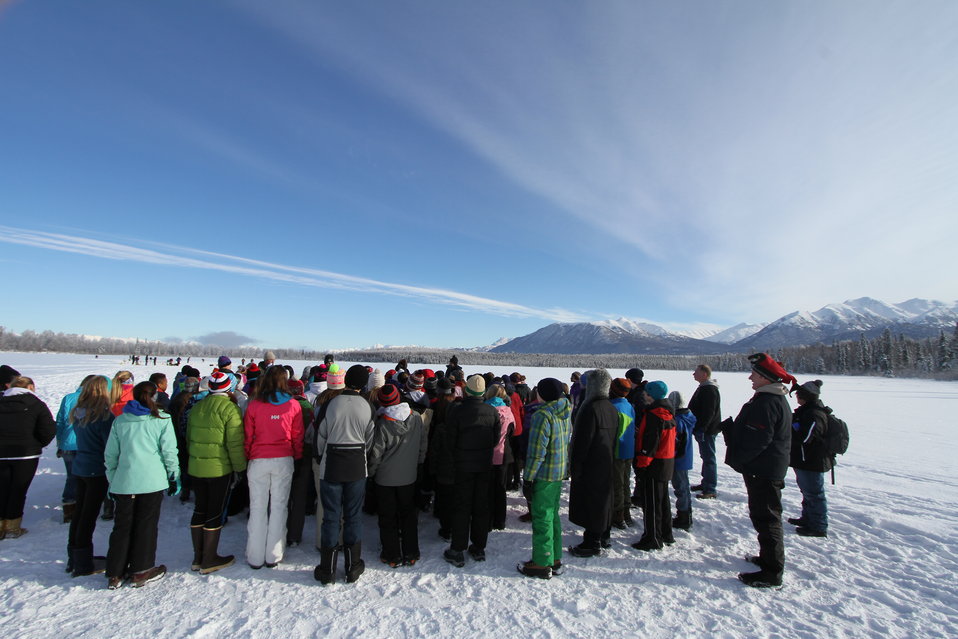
Connecting kids to fish via ice fishing!

100 kids are prepped on how to ice fish in Feb 2014 during a 2 day program co-sponsored by Alaska Department of Fish and Game and the U.S. Fish and Wildlife Service. USFWS/Katrina Mueller